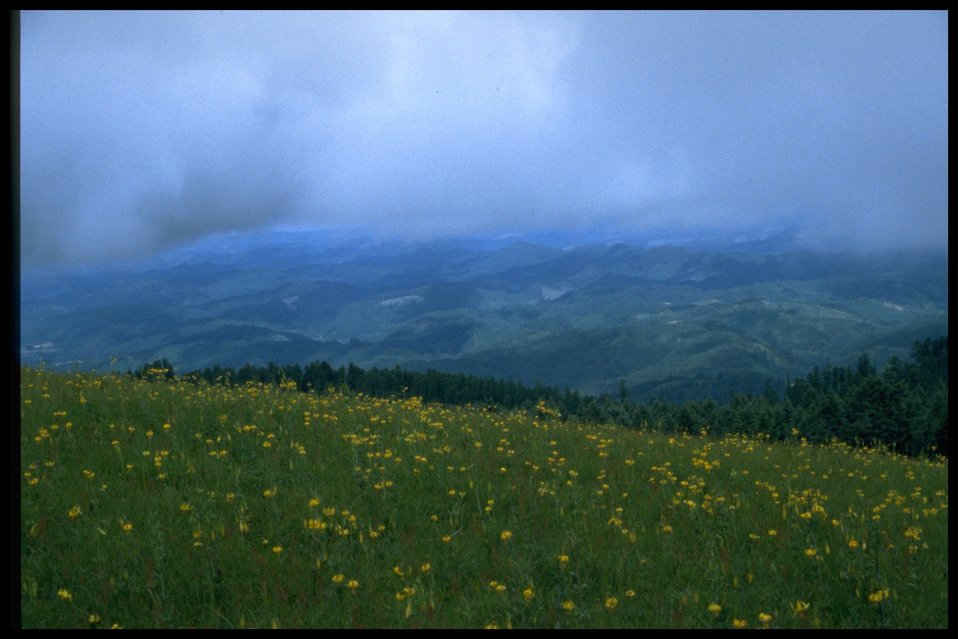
Meadow, wildflowers, scenic view from Mary's Peak.